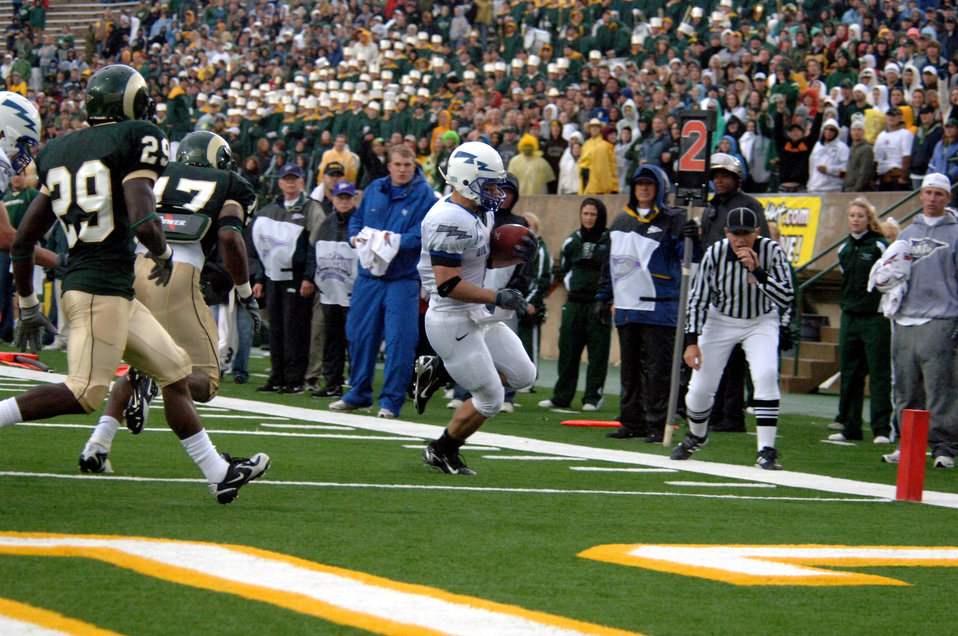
Football: Falcons, Hall run roughshod over CSU

Falcon Chad Hall steps into the corner of the end zone for one of his four touchdowns during Air Force's 45-21 victory over the Colorado State Rams Oct. 13 in Fort Collins, Colo. Hall broke the Academy's all-time single-game rushing record with 256 yards on 31 carries.